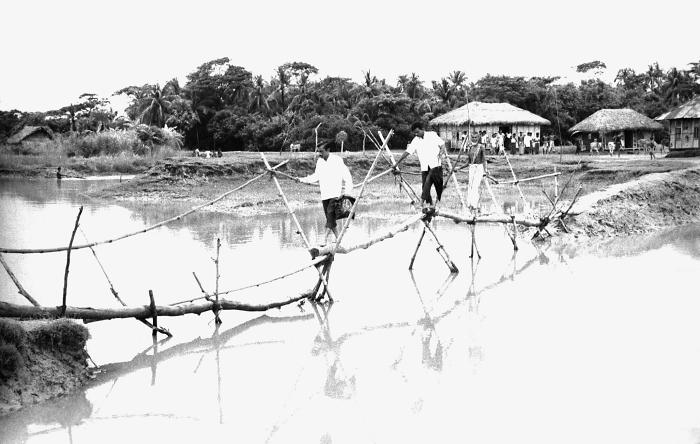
This 1975 image depicted a bamboo-constructed bridge used as an integral tool in daily Bangladesh village life, and was another of the routes eradication team members took when traveling from village to village throughout the waterway traversed nation. In his descriptions of many of these Bangladesh images, former E.I.S. Officer, Stanley O. Foster, M.D., M.P.H., stated that in his travels through Bangladesh during these eradication efforts of the 1970s, as he was traversing these bamboo bridges he actually fell from three of them into the river they were traversing. One of them broke under his weight. This bridge-walking eradication team member was seen here carrying a 'Smallpox Zero Bag', which carried the example pictures of smallpox cases, the bifurcated needles, and the smallpox vaccine.